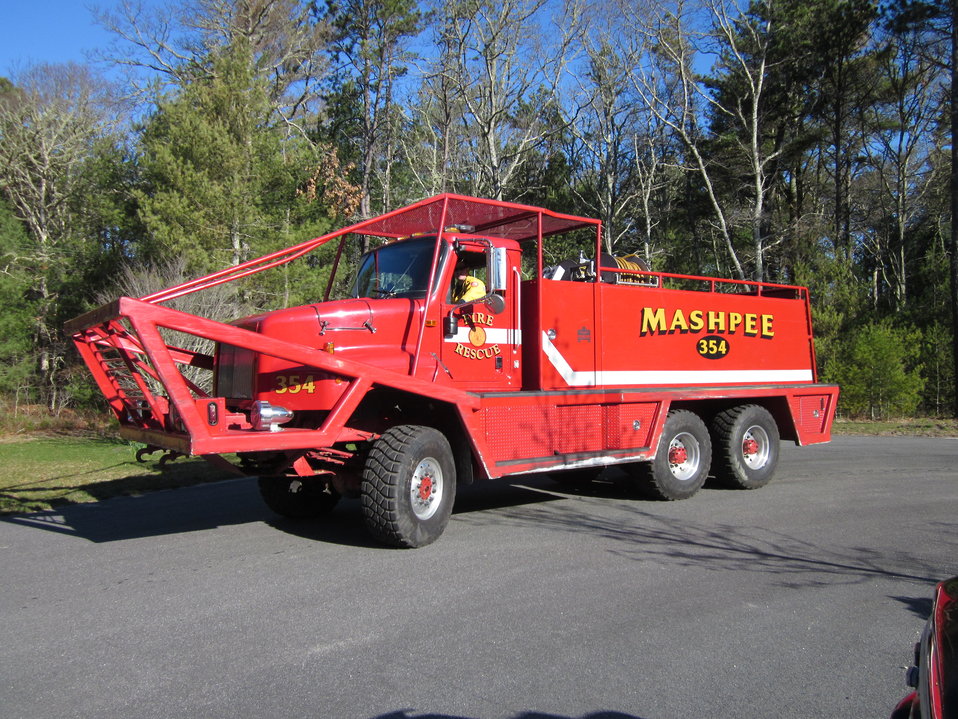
Mashpee Brush Breaker 354

Mashpee, Massachusetts, April 5, 2012. A Brush Breaker fire truck prepares to help do a controlled burn on the Town of Mashpee Holland Hill Barrens area of Mashpee National Wildlife Refuge. Stats on the forest firetruck: 2005 International 5600 6x6 / PolyMonax Corp. 2 door conventional cab Brush Breaker
650 gpm - 1000 gals - 50 Class A
Body is made of Polypropylene
Rear Pump & roll
Winch
The burn reduced fire risk to neighboring homes and improved habitat for the New England cottontail. It was conducted by the Town of Mashpee, U.S. Fish and Wildlife Service, State of Massachusetts Department of Conservation and Recreation, and Northeast Forest and Fire Management.